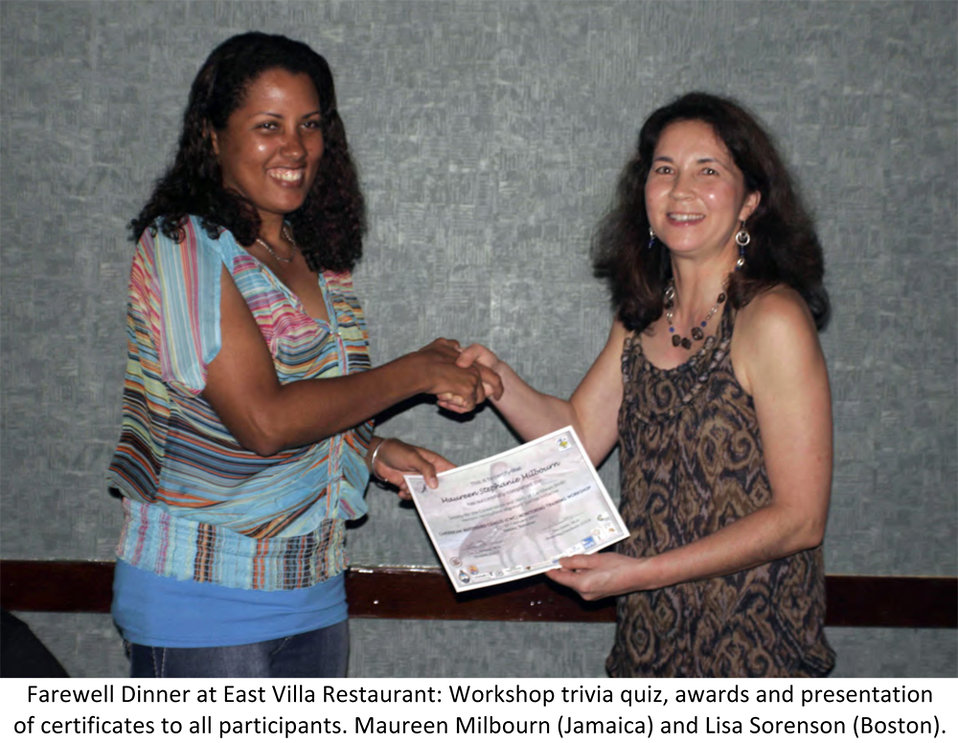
SCSCB-FWS-Interim-Report-2011